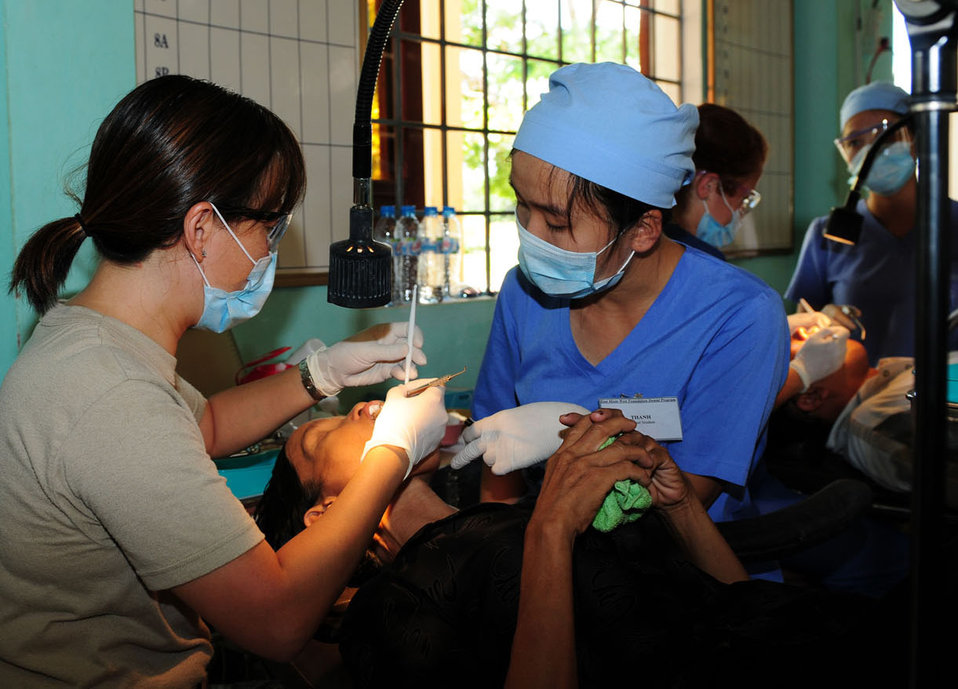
Air Force dentists saving smiles in Vietnam

Maj. (Dr.) Diep Le (left) provides dental care to a Vietnamese patient Sept. 18, 2009, as part of Operation Pacific Angel 2009 in Quang Tri Province, Vietnam. Doctor Le is part of a team of Air Force medical professionals and civil engineers in Vietnam providing humanitarian assistance in cooperation with local authorities to Quang Tri Province residents Sept. 15 to 24. Pacific Angel is a Pacific Air Forces operation led by 13th Air Force at Hickam Air Force Base, Hawaii. The joint and combined humanitarian assistance operation is conducted in the Pacific area of responsibility to support U.S. Pacific Command's capacity-building efforts. Doctor Le is a dentist and Air Force reservist from Travis Air Force Base, Calif.